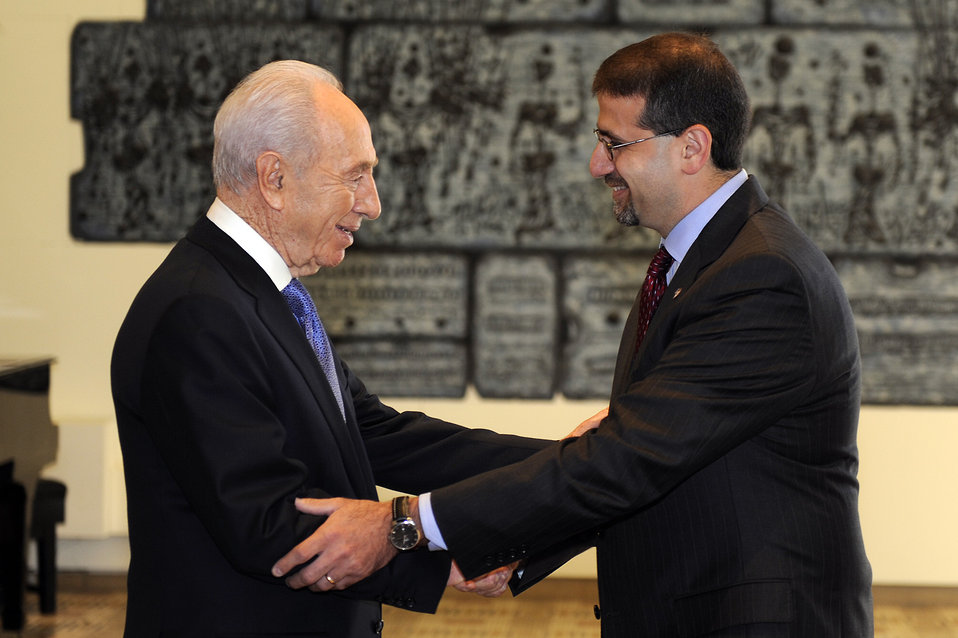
Ambassador Shapiro Shakes Hands With Israeli President Peres

U.S. Ambassador to Israel Daniel B. Shapiro shakes hands with Israeli President Shimon Peres after submitting his credentials at the President's residence in Jerusalem on August 3, 2011.